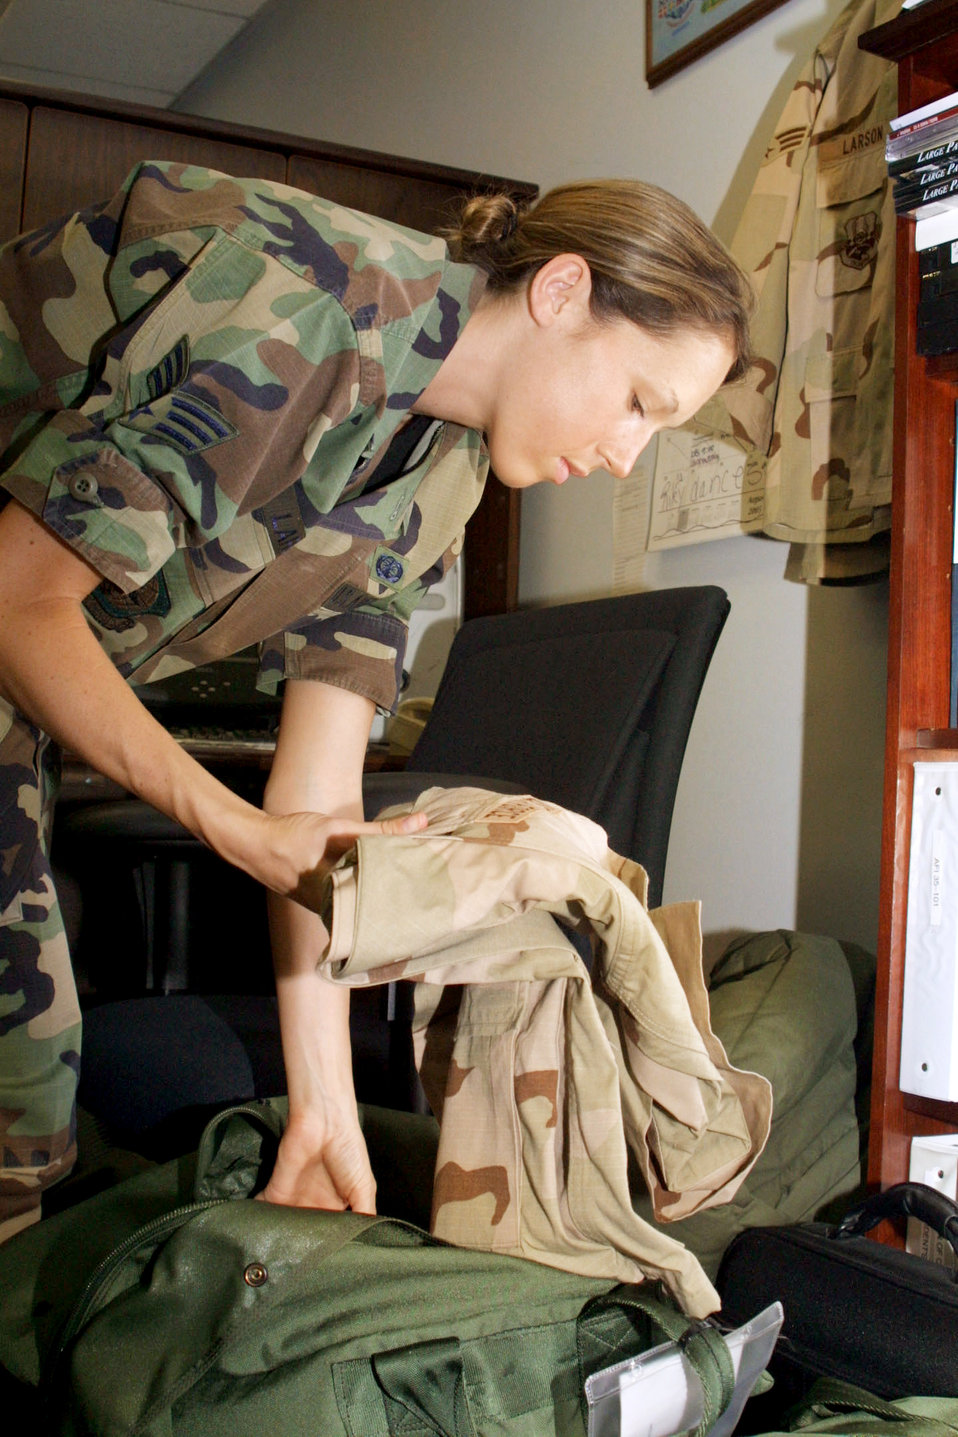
Deploying soon

POPE AIR FORCE BASE, N.C. -- Senior Airman Elizabeth Larson packs her bags with her desert camouflage uniform and other necessities prior to deploying to support the war on terrorism. She is a 43rd Comptroller Squadron financial technician here.